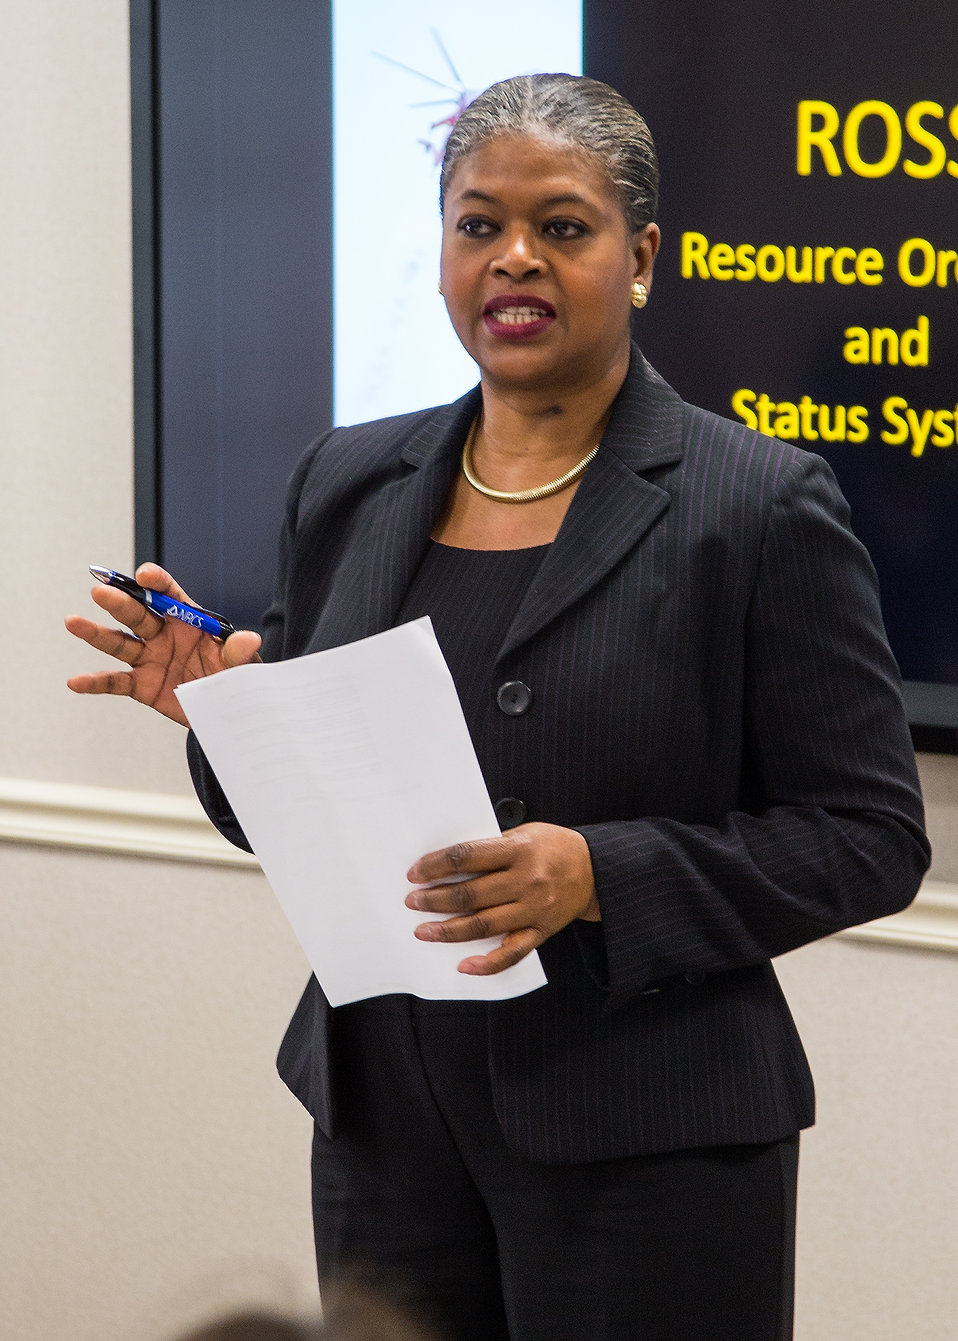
Yvonne Jackson, Assistant Chief Information Officer welcomes Thomas Jefferson High School of Science and Technology students to the U.S. Department of Agriculture (USDA), Office of the Chief Information Officer (OCIO) IT Job Shadow Day, Tuesday, Mar. 25, 2014. The OCIO IT Job Shadow Day hosts students from local high schools in the Washington, D.C. area annually with IT professionals and agricultural specialists from a variety of mission areas at USDA.